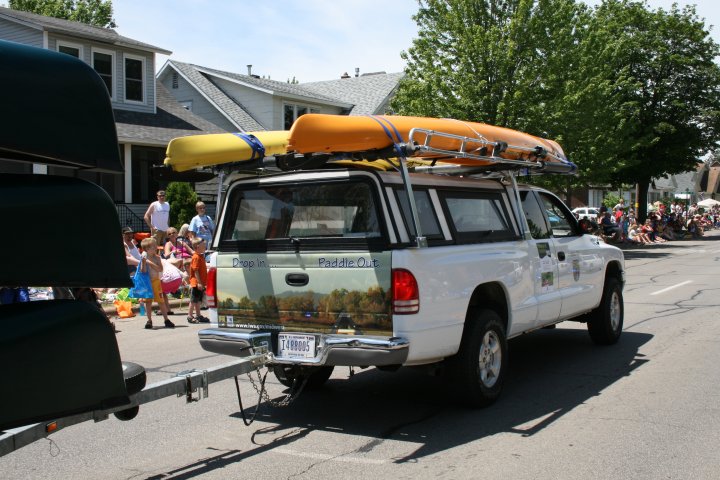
WD paddle vehicle

The Winona District paddling vehicle makes it way down the Steamboat Days Parade route.